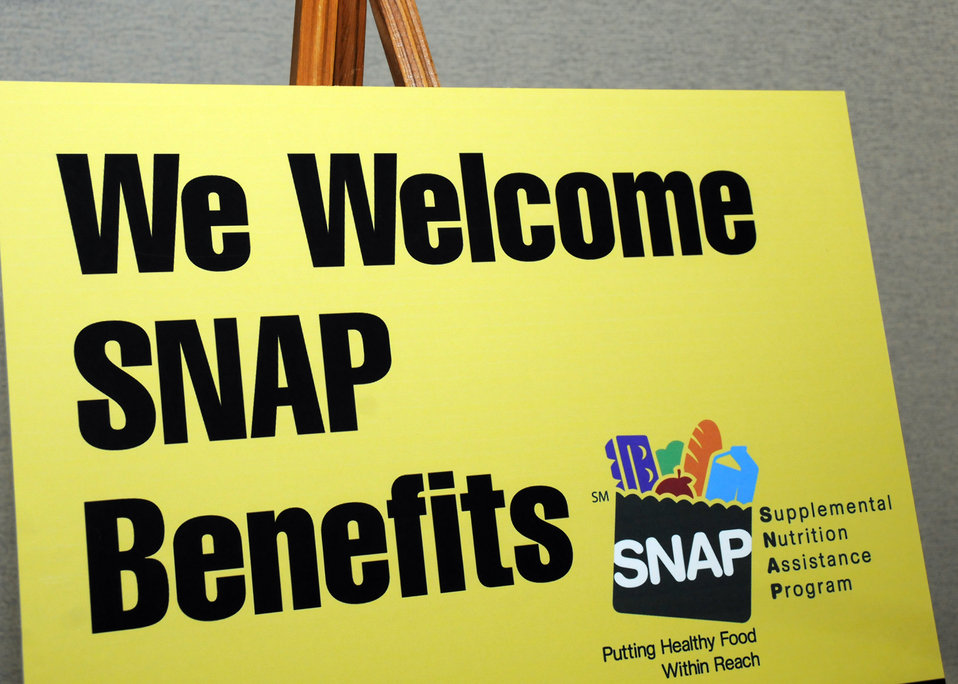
The new sign for the Supplemental Nutrition Assistance Program (SNAP) “We Welcome SNAP Benefits”, was unveiled on Wednesday, May 19, 2010, at the Department of Agriculture in Washington, D.C. USDA photo 10di1363-15.